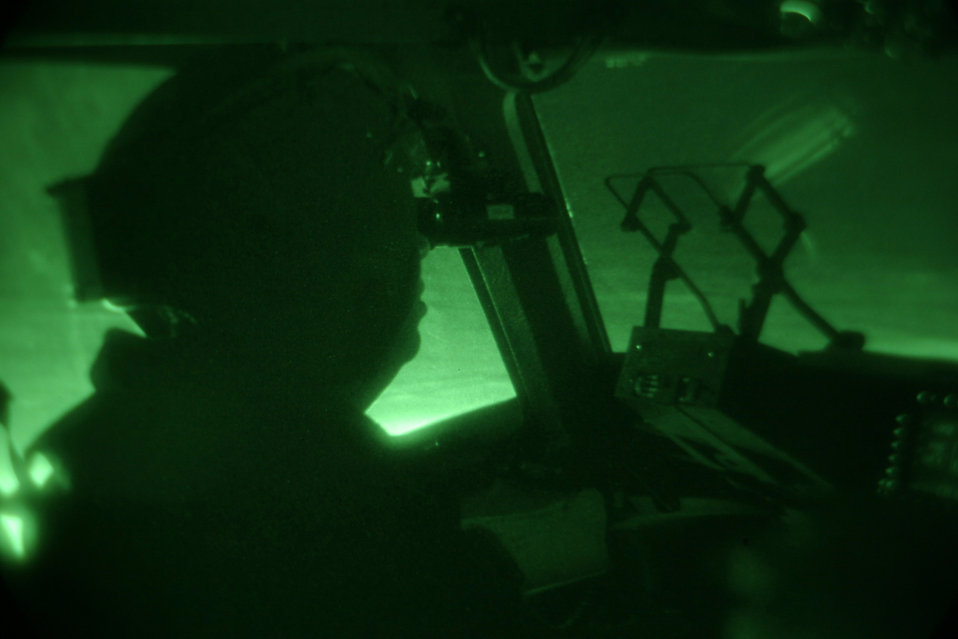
C-17 crew makes history in Antarctica

Lt. Col. James McGann looks out over the ice after a night vision goggles-assited landing on Pegasus Ice Runway near McMurdo Station, Antarctica, on Sept. 11. Colonel McGann leads a crew testing the concept of using night vision technology in combination with reflective cones and limited electrical lighting to land safely on the ice runway after dark. The mission was conducted by Joint Task Force Support Forces Antarctica, headquartered at Hickam Air Force Base, Hawaii, and led by 13th Air Force. The joint task force is currently conducting Operation Deep Freeze in support of the National Science Foundation and U.S. Antarctic Program. Colonel McGann is the commander of the 304th Expeditionary Airlift Squadron at Christchurch, New Zealand.